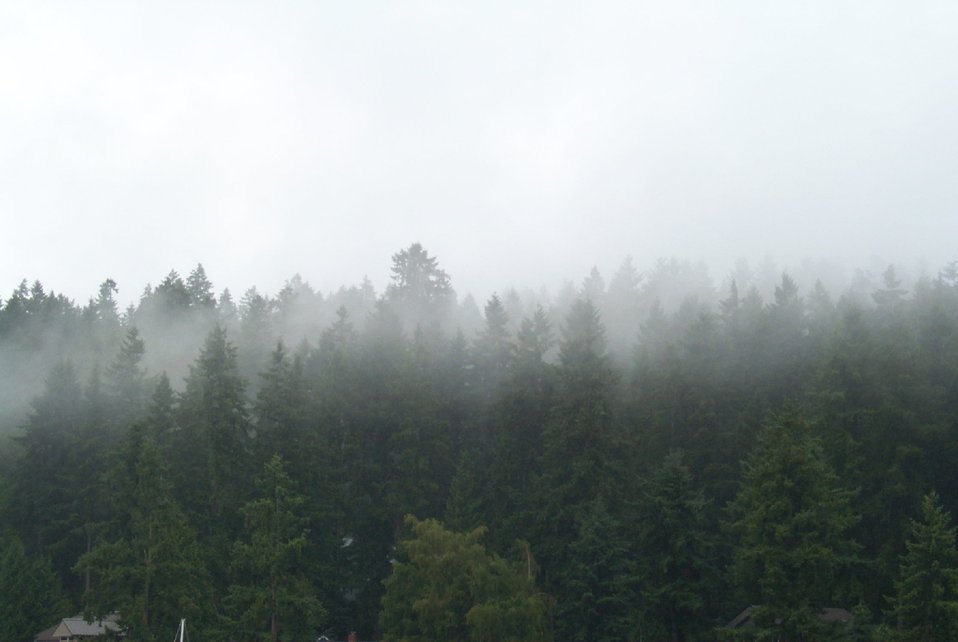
Low rain clouds as seen looking across Gig Harbor.